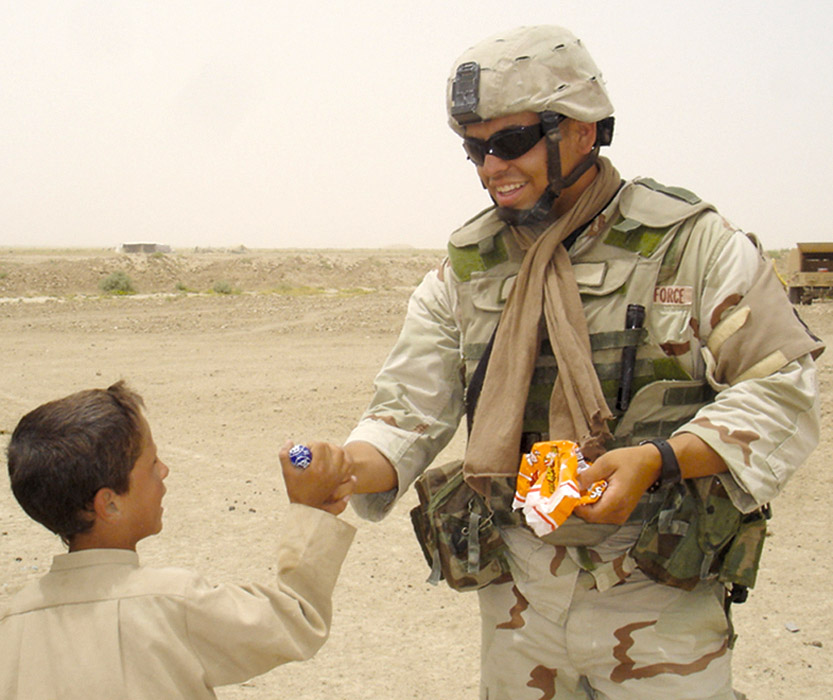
Airman shot to death on leave

IRAQ -- Airman 1st Class Phillip Ovalle, pictured here handing out candy to an Iraqi child near Ali Base where he was deployed earlier this summer, was shot to death Sept. 27 while on post-deployment leave in Texas. Airman Ovalle was assigned to the 4th Security Forces Squadron at Seymour Johnson Air Force Base, N.C.